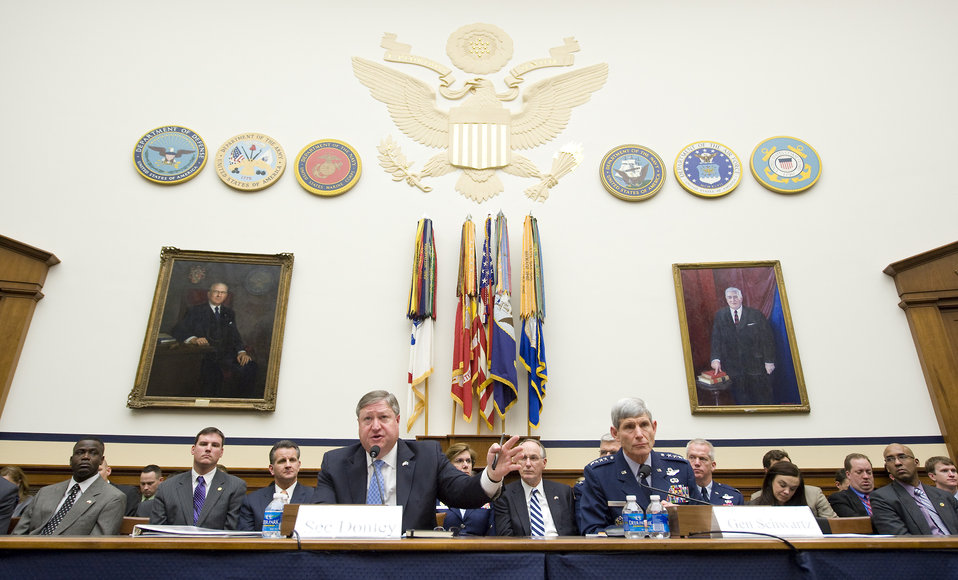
Air Force Budget Proposal to the House Armed Services Committee

Secretary of the Air Force Michael Donley (left) and Air Force Chief of Staff Gen. Norton Schwartz present the Air Force's fiscal 2012 budget proposal during a hearing before the House Armed Services Committee Feb. 17, 2011, in Washington, D.C.